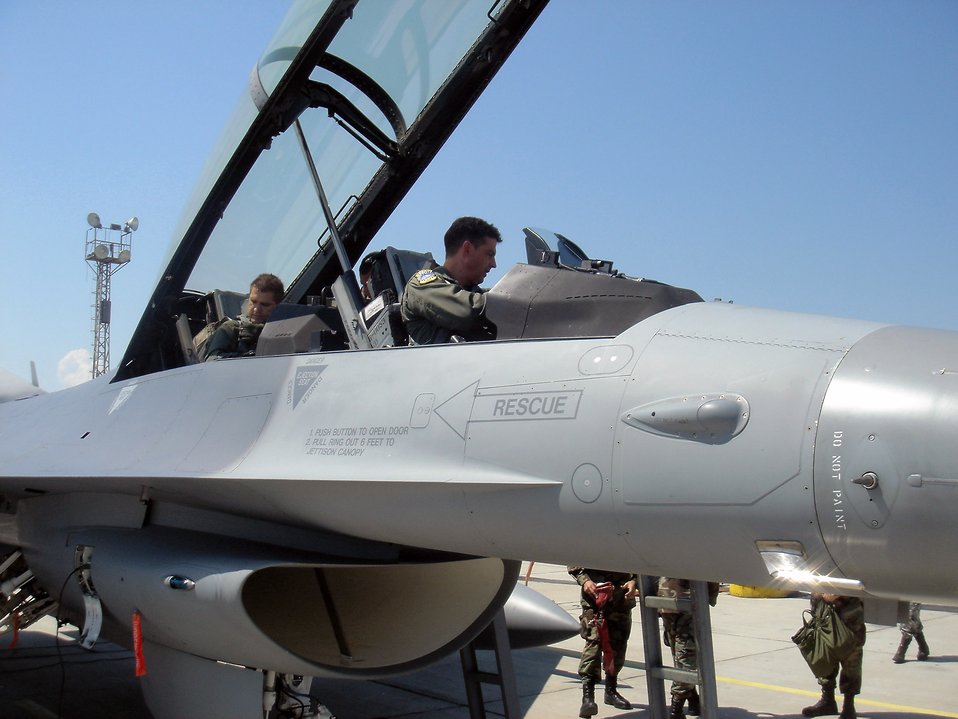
Bulgarian incentive flight

Lt. Col. Jose Monteagudo prepares to take Bulgarian Defense Minister Nikolay Tsonev (backseat) on a flight in an F-16 Fighting Falcon June 11 at Graf Ignatievo Air Base, Bulgaria. Colonel Monteagudo and 10 F-16s from the 93rd Fighter Squadron at Homestead Air Reserve Base, Fla., are at Graf Ignatievo AB to particpate in a joint drill with 15 Bulgarian MiG-21 and MiG-29 fighters. MInister Tsenov visited the base to see how the joint drill was progressing. Colonel Monteagudo is an F-16 pilot from the 482nd Fighter Wing.